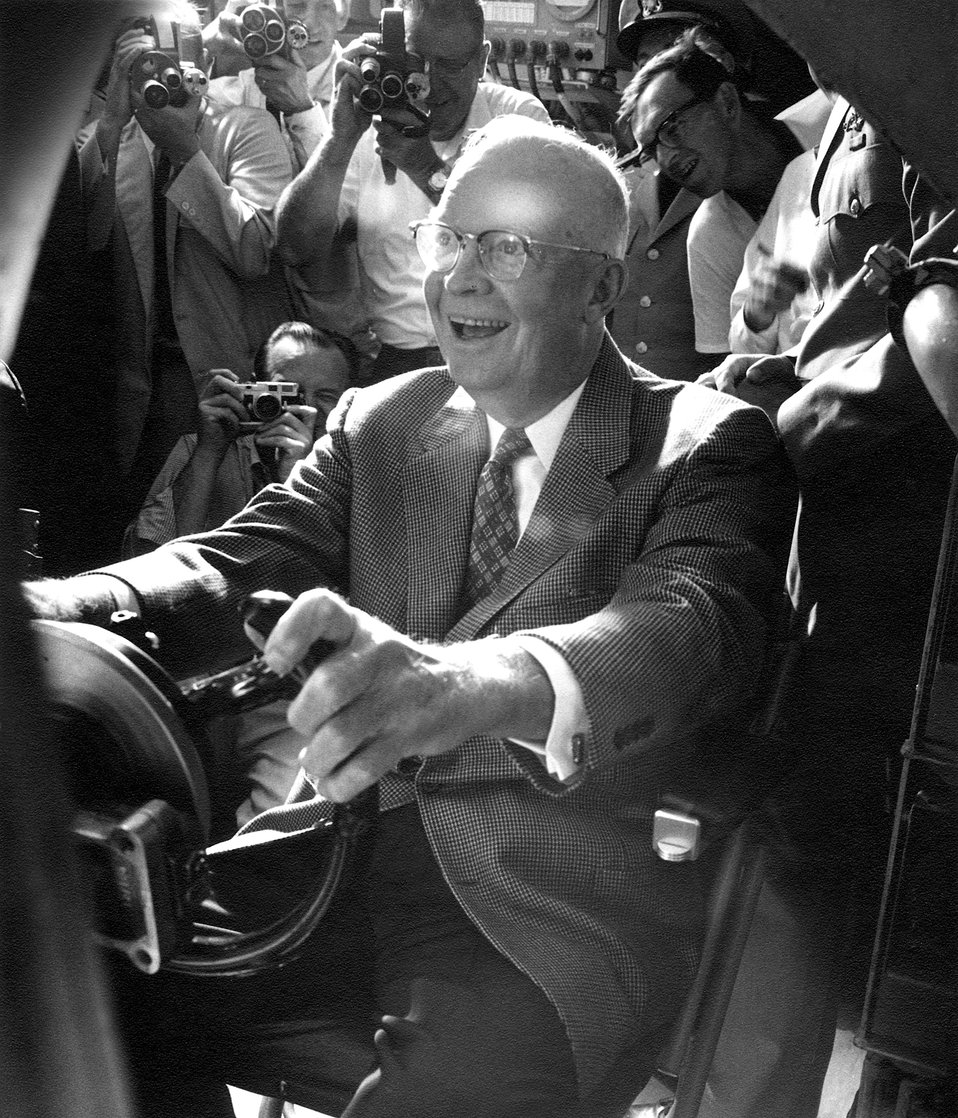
President Eisenhower at submarine controls of USS George Washington, 1960.